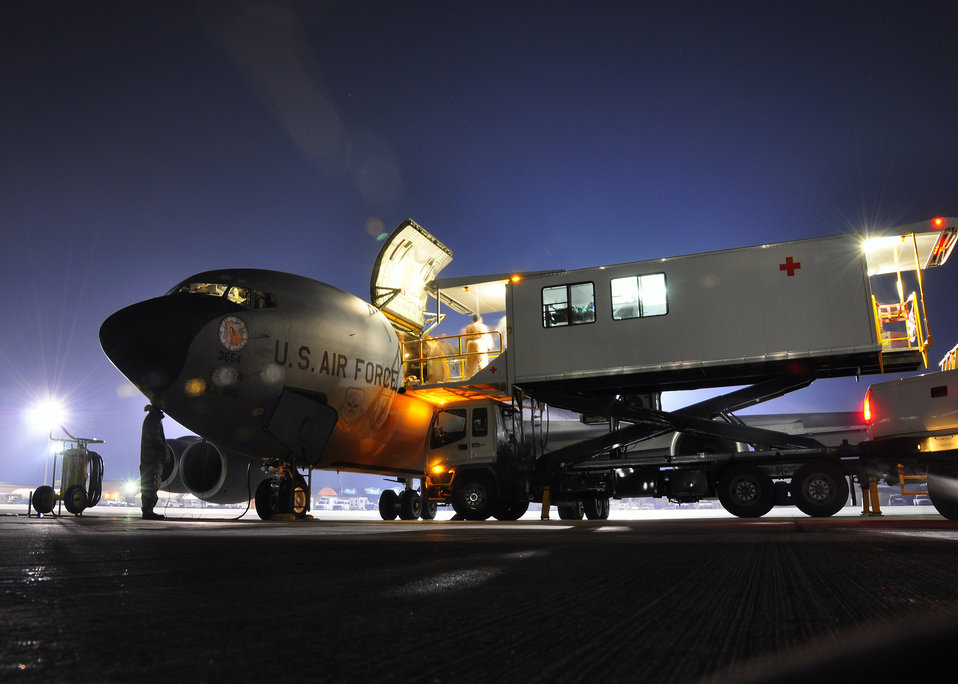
Getting the wounded to specialized care

Sick and wounded servicemembers are transferred onto a KC-135 Stratotanker at Bagram Air Field, Afghanistan. Members of the 931st Air Refueling Group from McConnell Air Force Base, Kan., volunteered for the 12-day aeromedical evacuation mission.